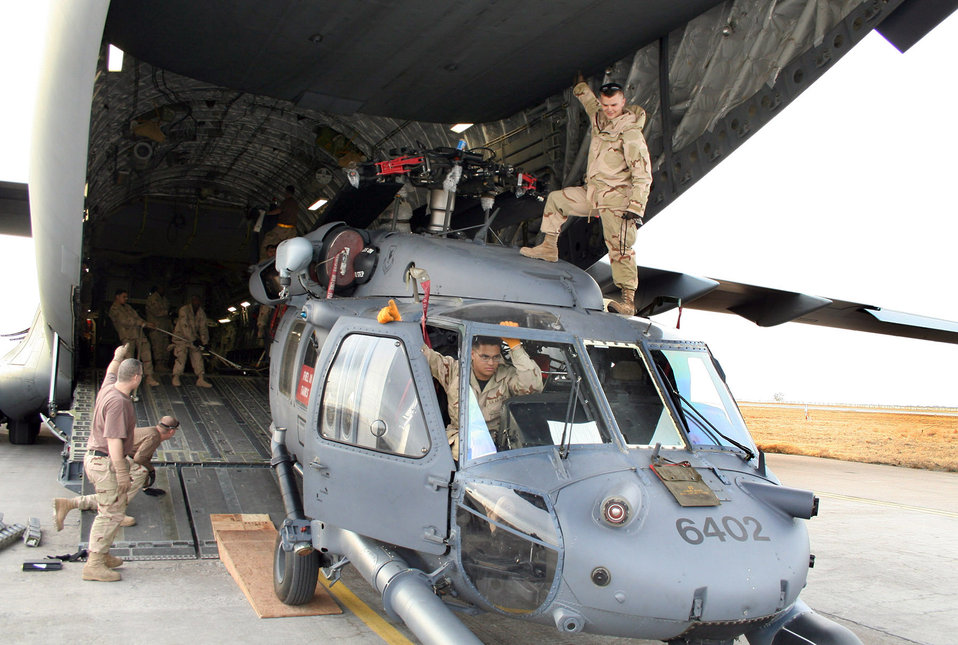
Airpower summary

376th Air Expeditionary Wing aerial porters work with maintainers to load a UH-60L Blackhawk helicopter into a C-17 Globemaster III supporting Operation Enduring Freedom. The maintainers and helicopter are deployed from the 33rd Rescue Squadron, Kadena Air Base, Japan.